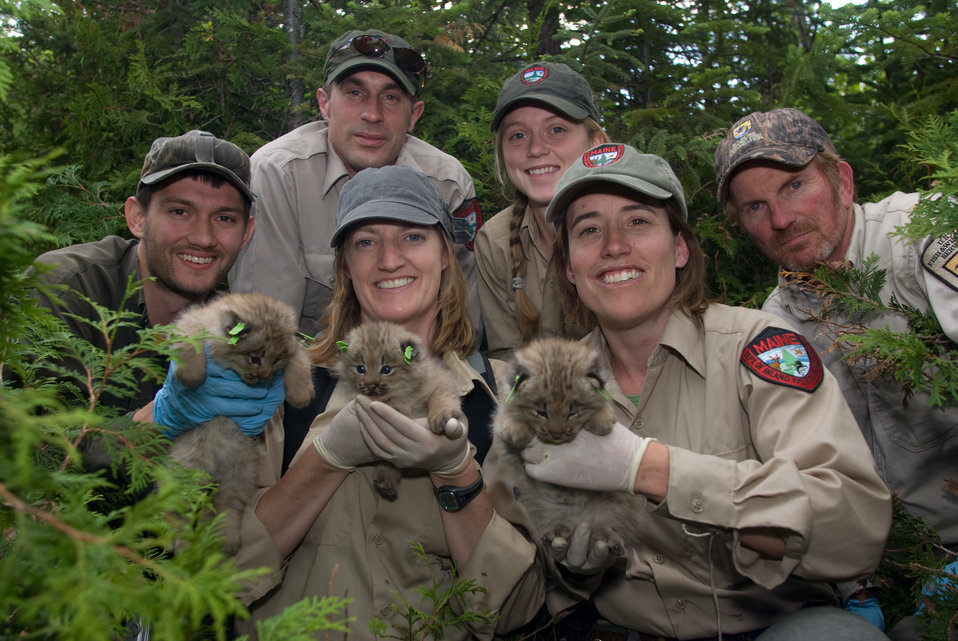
Lynx Project Team

The team of wildlife biologists, students, and volunteers from the Maine Department of Inland Fisheries, University of Maine, and U.S. Fish and Wildlife Service.